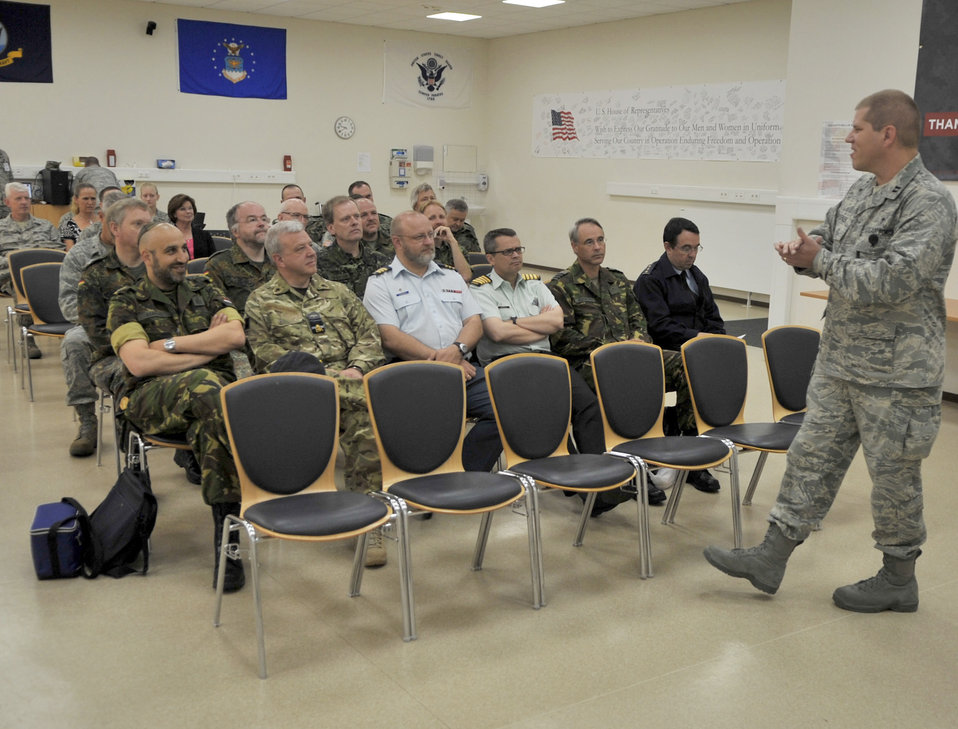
NATO AAFCCC 2011

Chaplain (Capt.) Kraig Kroeker briefs Chaplain (Maj. Gen.) Cecil R. Richardson and other NATO chaplains June 16, 2011, during the NATO Allied Air Force Chaplains Consultative Committee Conference at Ramstein Air Base, Germany, June 16, 2011. Chaplain Kroeker is the 86th Contingency Aeromedical Staging Facility chaplain. Chaplain Richardson is the U.S. Air Force chief of chaplains.